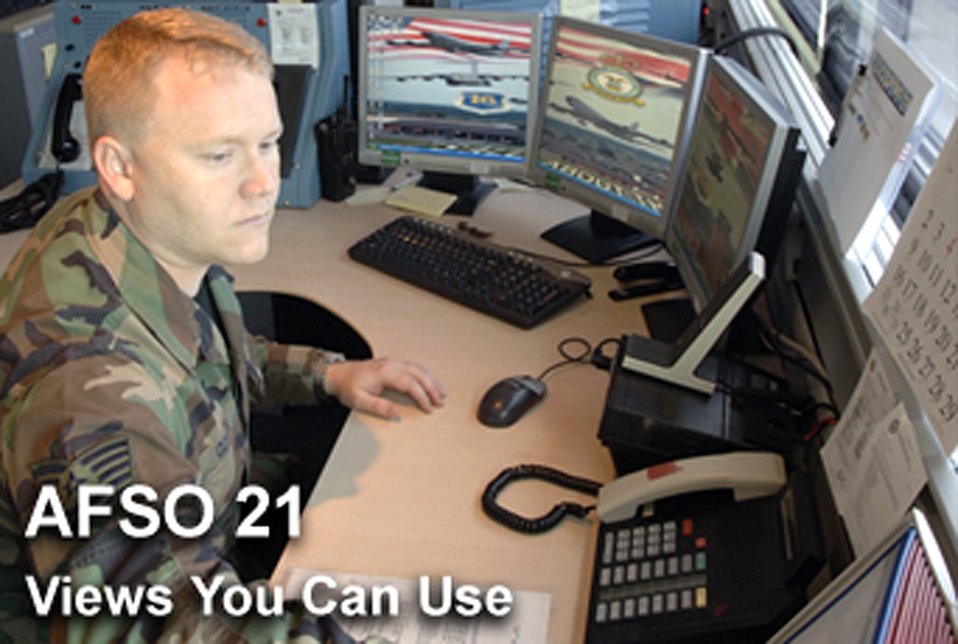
Views You Can Use

The Air Force Smart Operations for the 21st Century office created a new product to keep Airmen informed about AFSO 21. The new